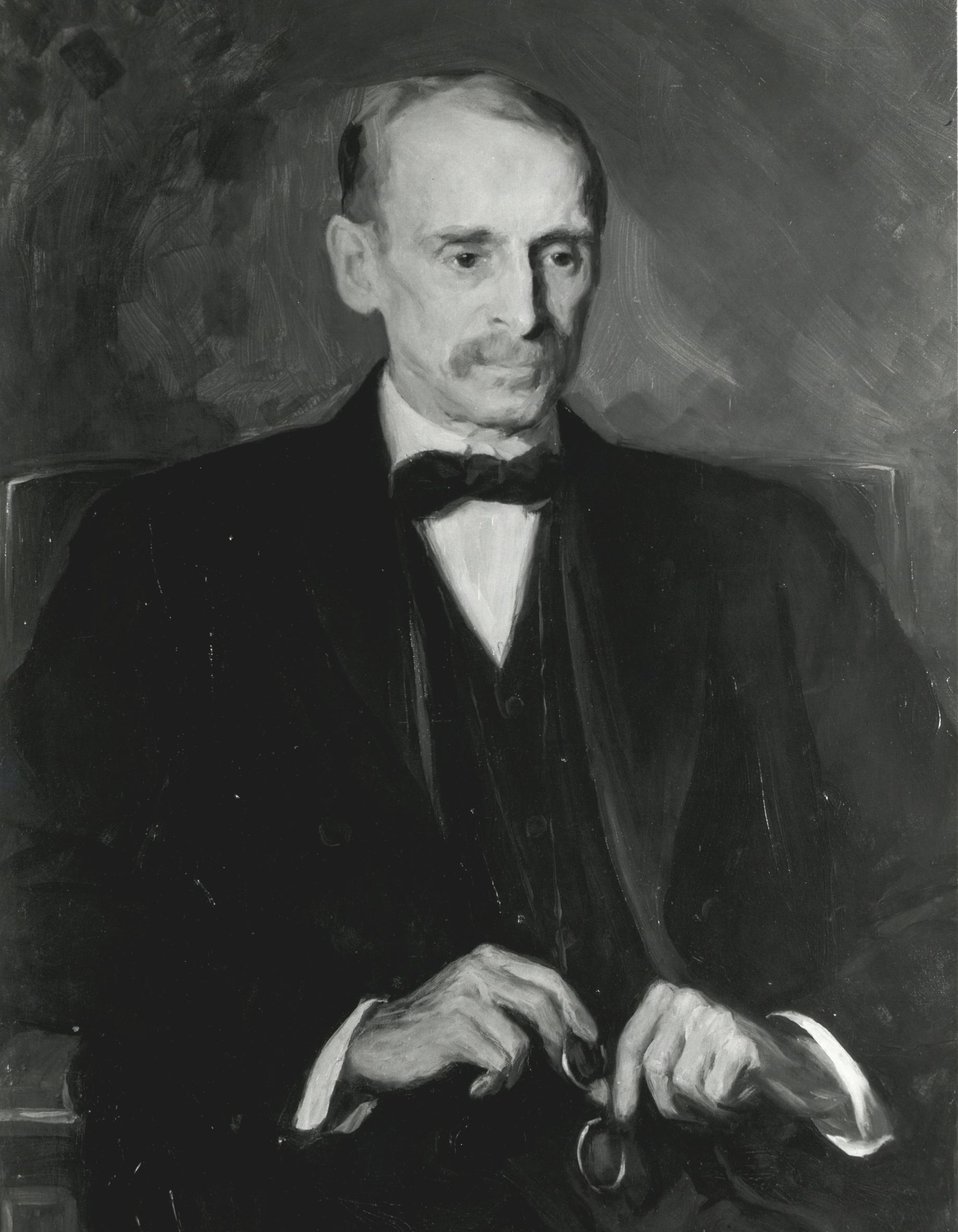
William R. Day, U.S. Secretary of State, April 28, 1898 to September 16, 1898